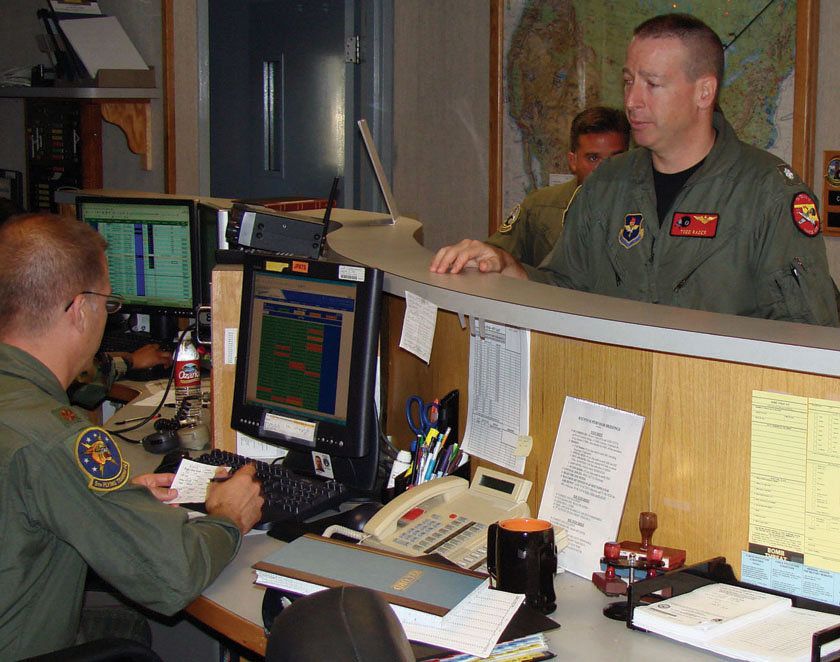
Navy officer leads AF squadron, celebrates Navy birthday

Navy Cmdr. Todd Rader checks in at the Vance Air Force Base, Okla., operations desk Oct. 4 prior to departing on a training sortie. Commander Rader, the 8th Flying Training Squadron commander, currently is the only active-duty naval officer serving as an Air Force squadron commander in the Air Education and Training Command. He carries on a tradition of having a Navy officer rotate every other year as commanding officer of the unit.